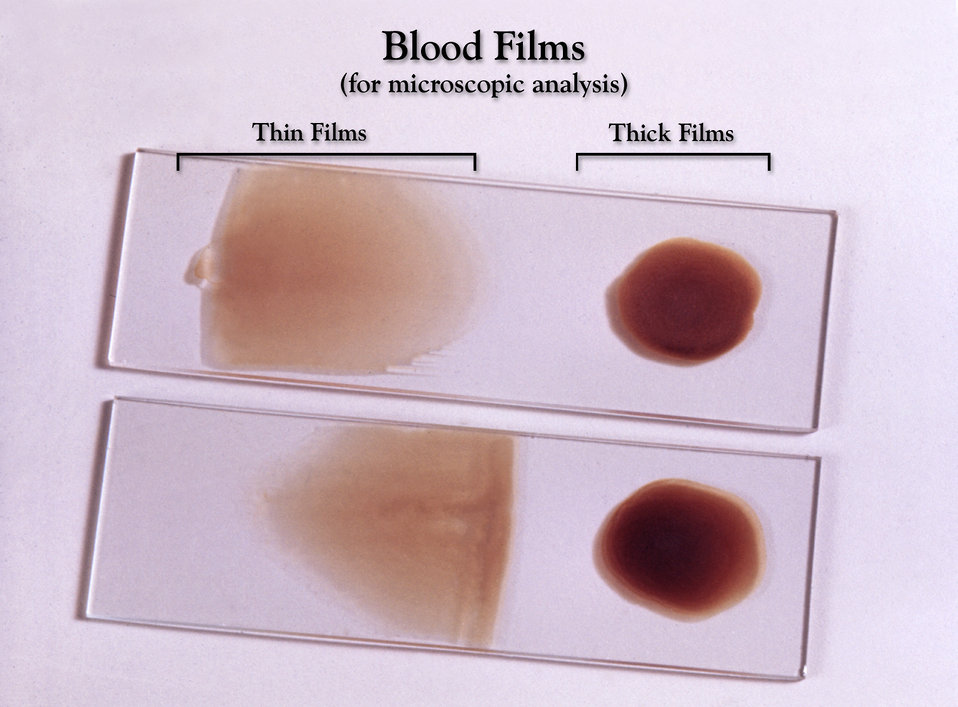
These prepared slides offer examples of the appearance of thick and thin blood smears to be examined under the microscope.